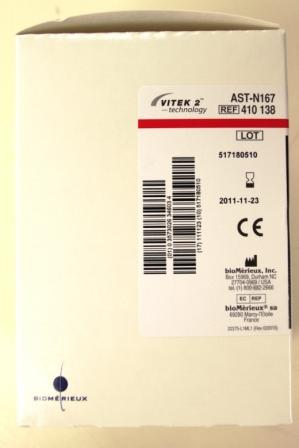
RECALLED - 2 Gram Negative Susceptibility Cards containing the antibiotic Piperacillin/Tazobactam

April 8, 2011 - Product Recall - bioMérieux, Inc. Issues Urgent Expanded Product Recall for VITEK® 2
Piperacillin/Tazobactam Test on Gram Negative Susceptibility Cards.